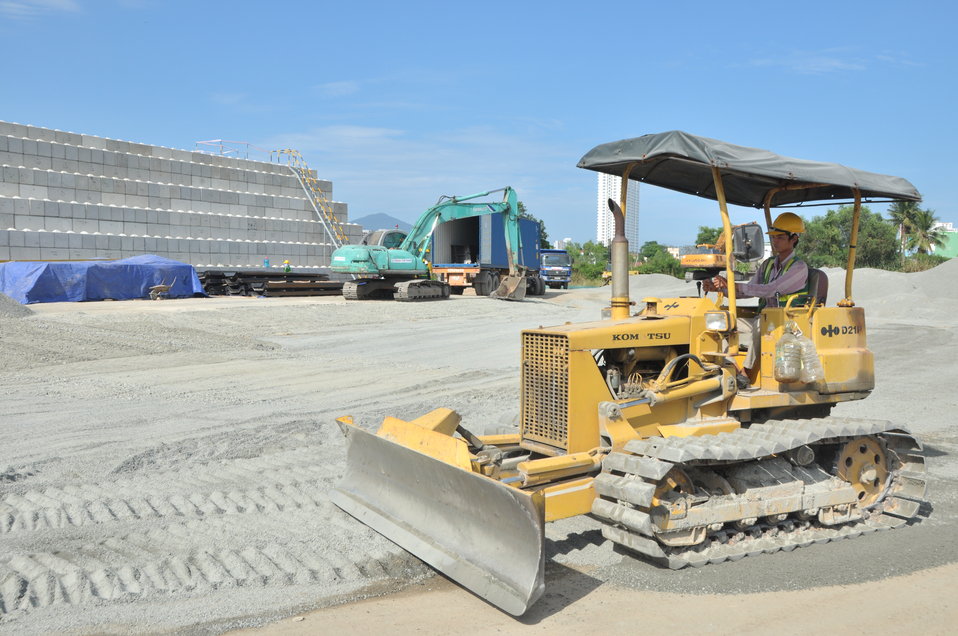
Site construction at the Environmental Remediation of Dioxin Contamination at Danang Airport

Progress at the Danang Airport remediation site
April 23, 2013